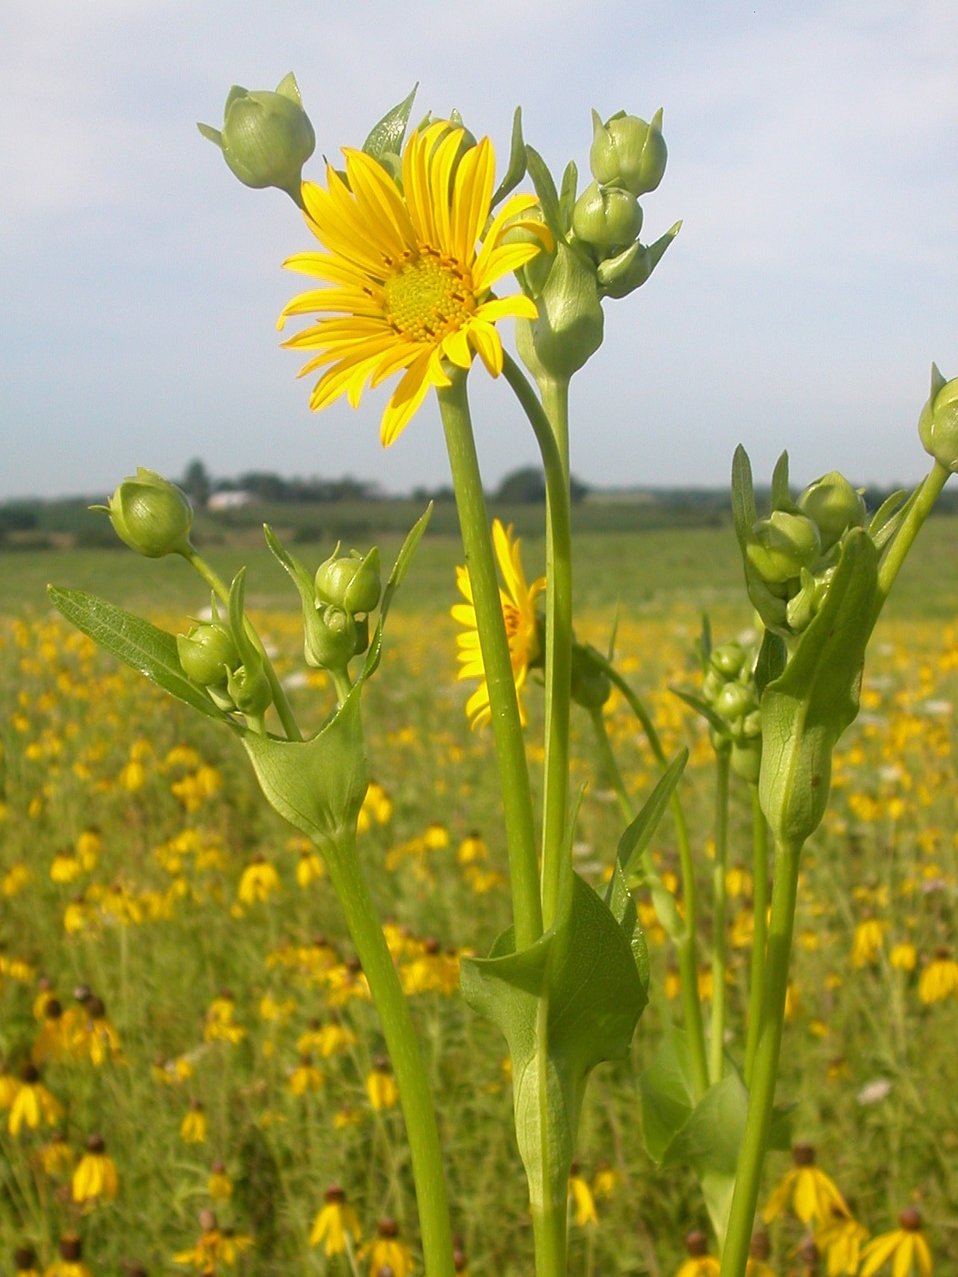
cup plant, Neal Smith Refuge

A cup plant (Silphium perfoliatum), native to the prairie, bathes in the sun at Neal Smith National Wildlife Refuge in Iowa.